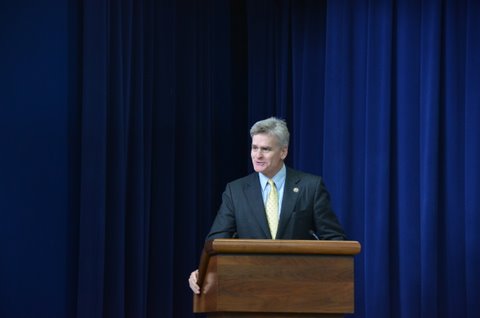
Rep. Bill Cassidy

WH 2012 World Hepatitis Day Event